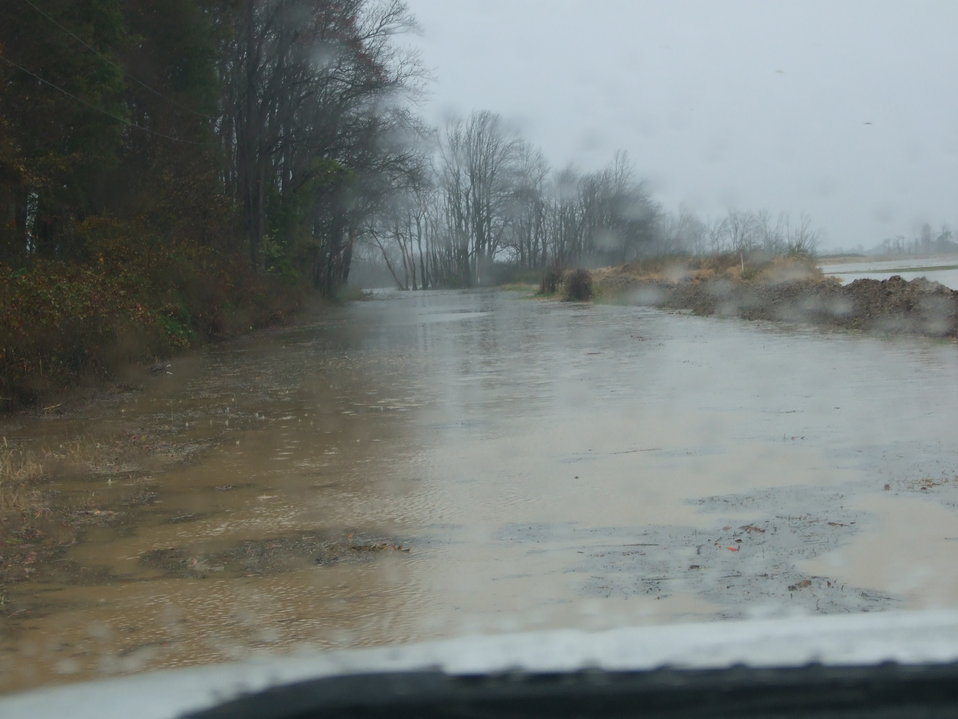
Flooding at Prime Hook National Wildlife Refuge (DE)

Flooding at Fowler's Beach Road during the storm, looking east.